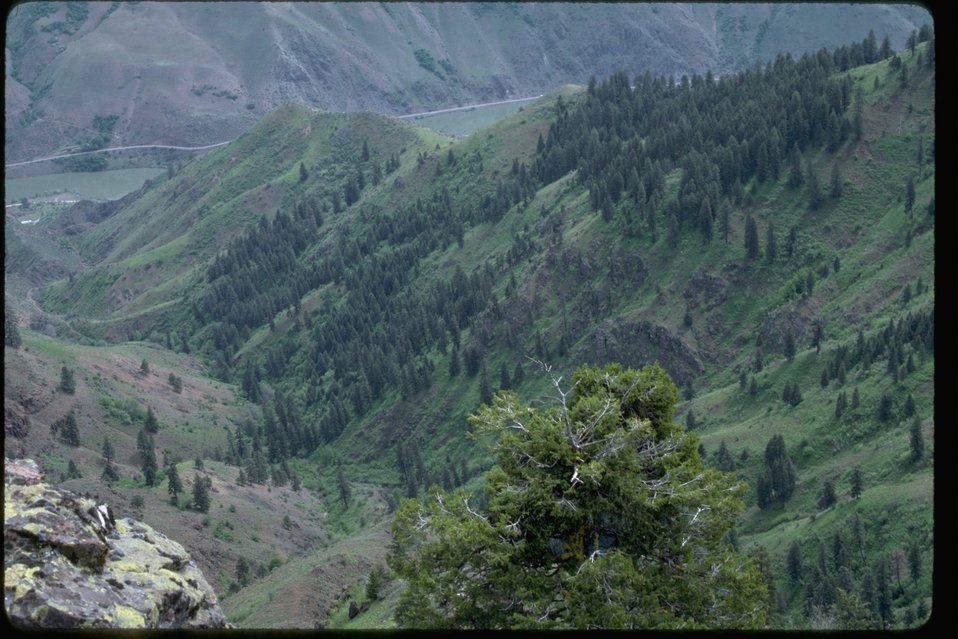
A large ravine in the Homestead Wilderness Study Area.